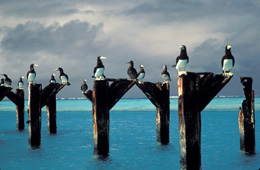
Brown-Footed Boobies - Johnston Atoll NWR

Seabirds are the most noticeable form of wildlife on Johnston Atoll NWR and are among the longest-lived birds in the world.